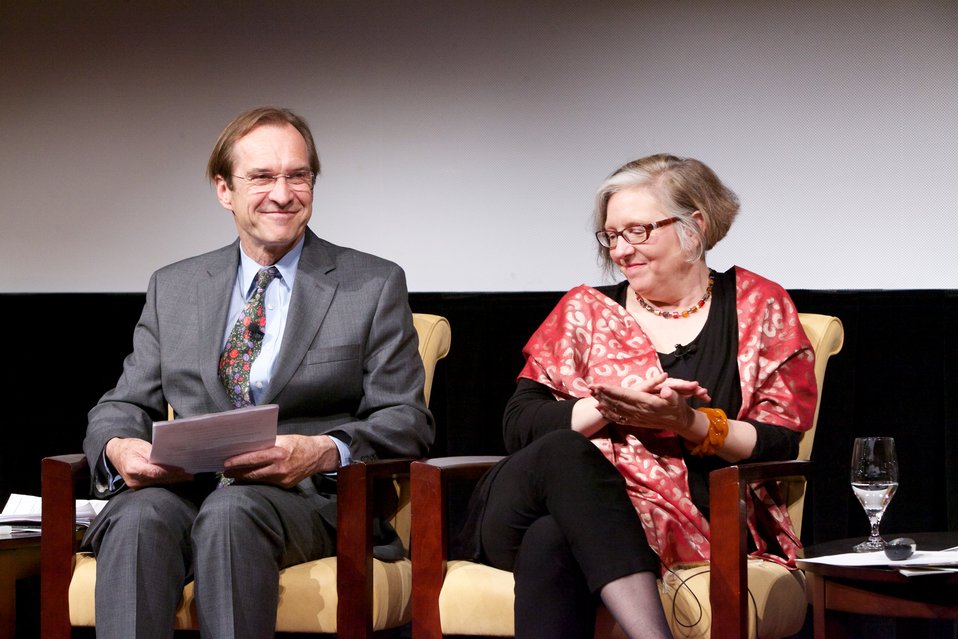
Jazz Diplomacy: Sending America's Music to the World